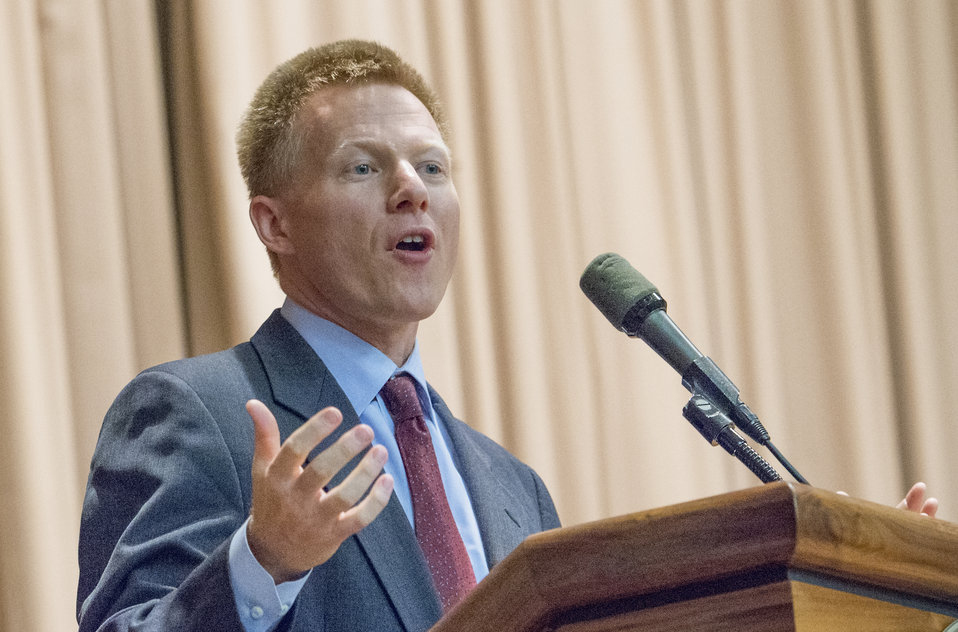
U.S. Department of Agriculture (USDA) StrikeForce Initiative Director Max Finberg speaks at the 2013 American Indian and Alaska Native Heritage Observance at USDA on Thursday, Nov. 14, 2013 in Washington, D.C. The theme of this year’s event was 'Guiding Our Destiny with Heritage and Traditions.”